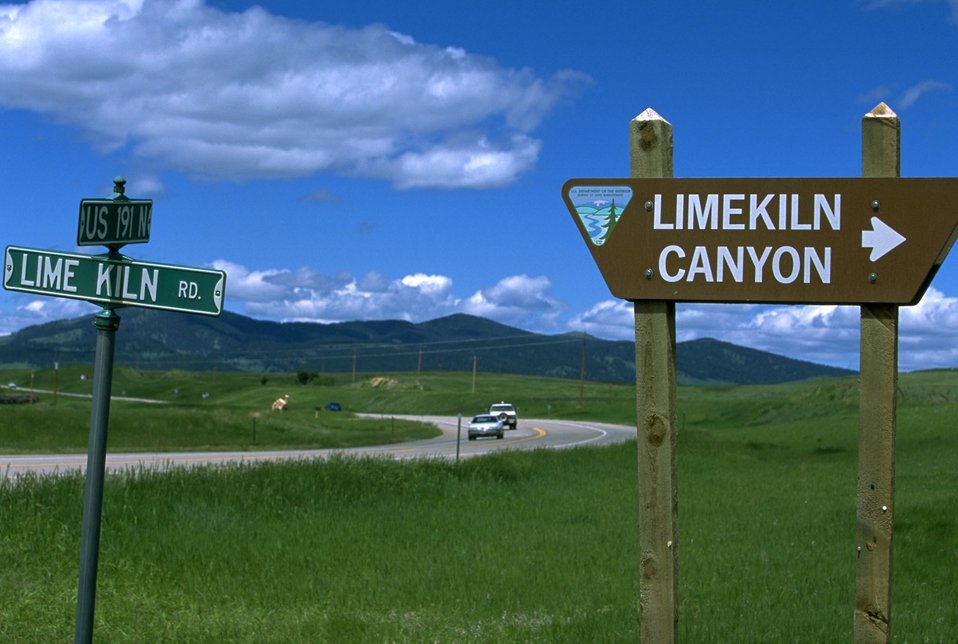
Road signs and BLM sign leading to LimeKiln Canyon